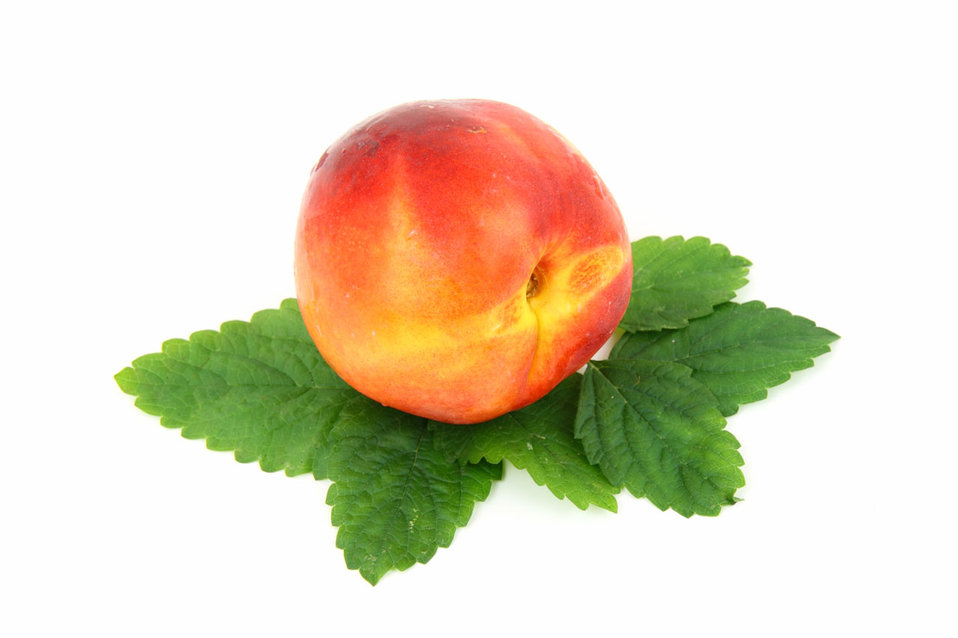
Single nectarine isolated on white background.